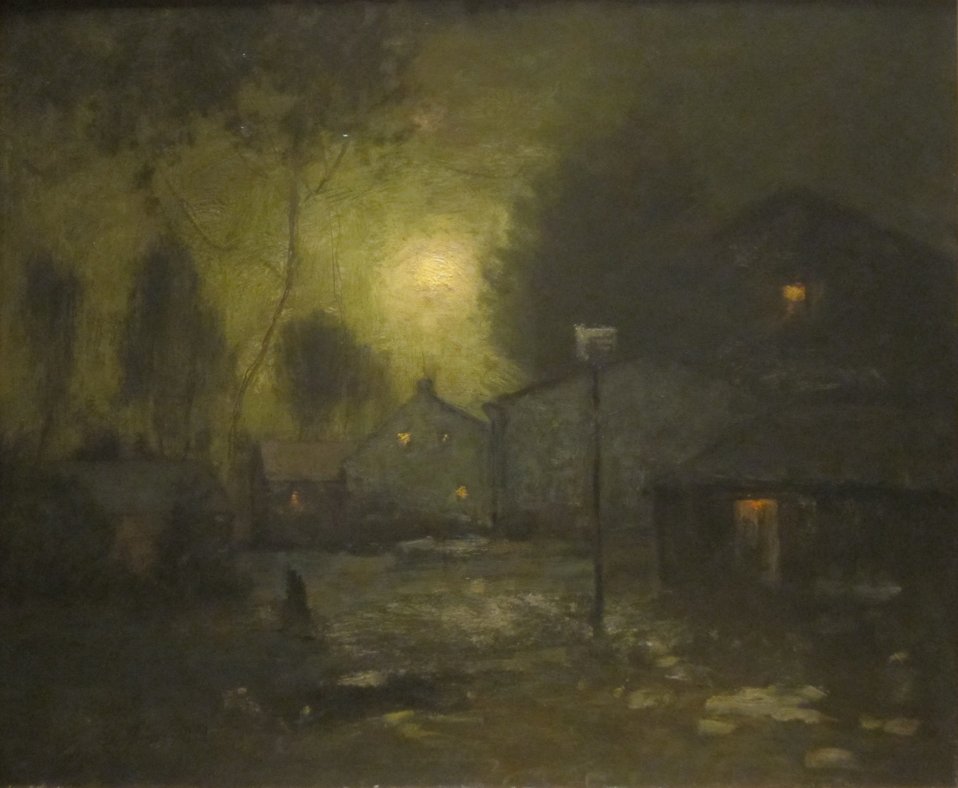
Moonlight, oil on canvas painting by George Inness, 1893, De Young Museum